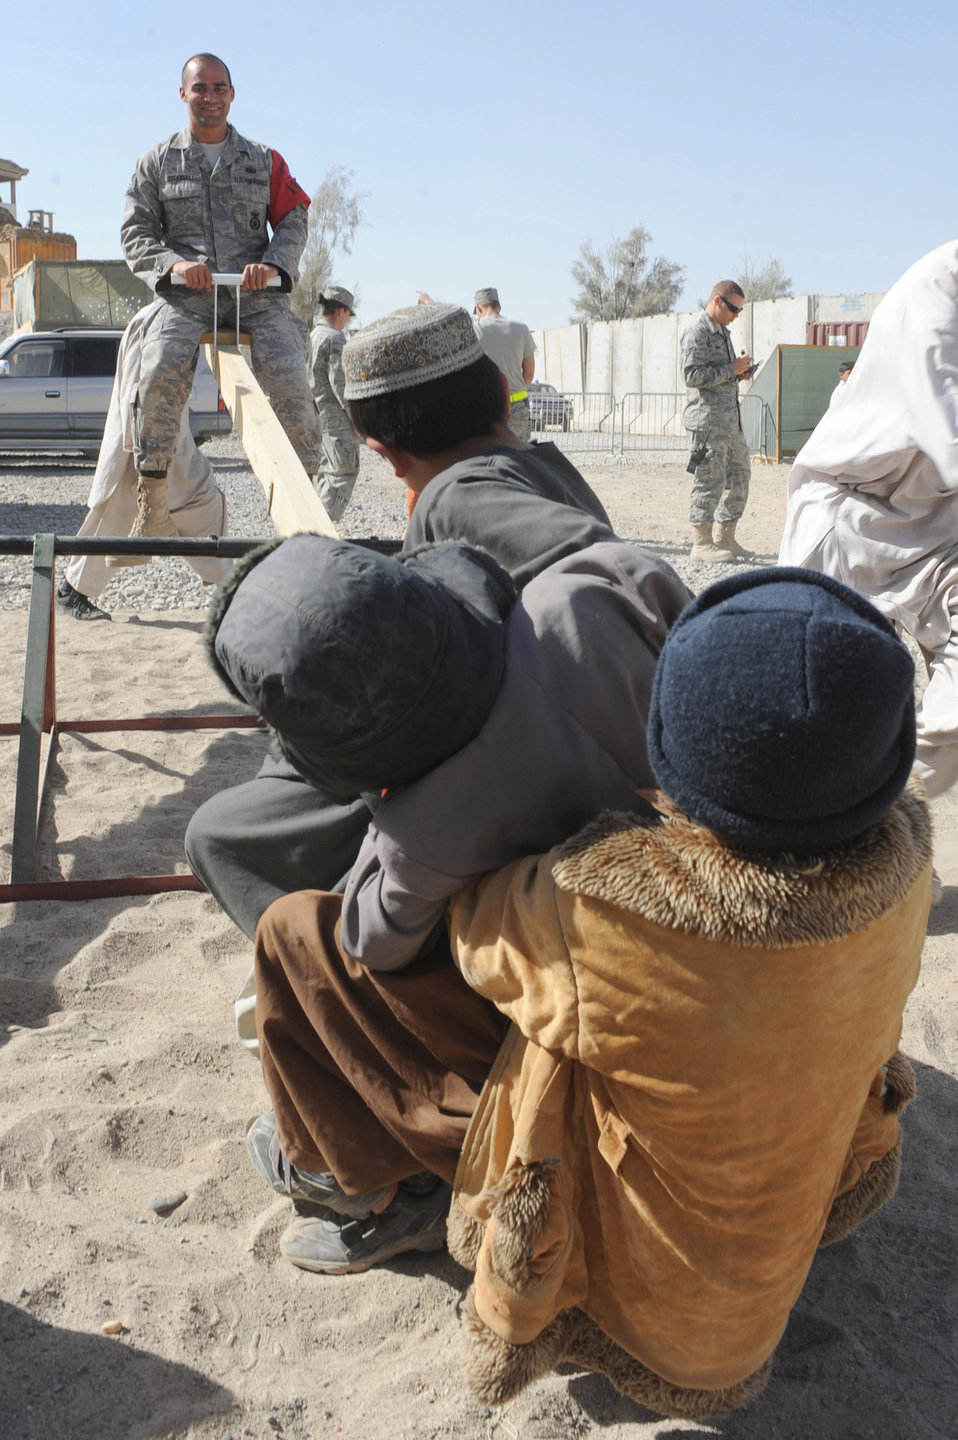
KAF bazaar school

Tech. Sgt. Michael Zigarelli plays with a group of Afghan children on a seesaw Nov. 13, 2010, at Kandahar Airfield, Afghanistan. Sergeant Zigarelli is a patrolman with the International Security Assistance Force Military Police.